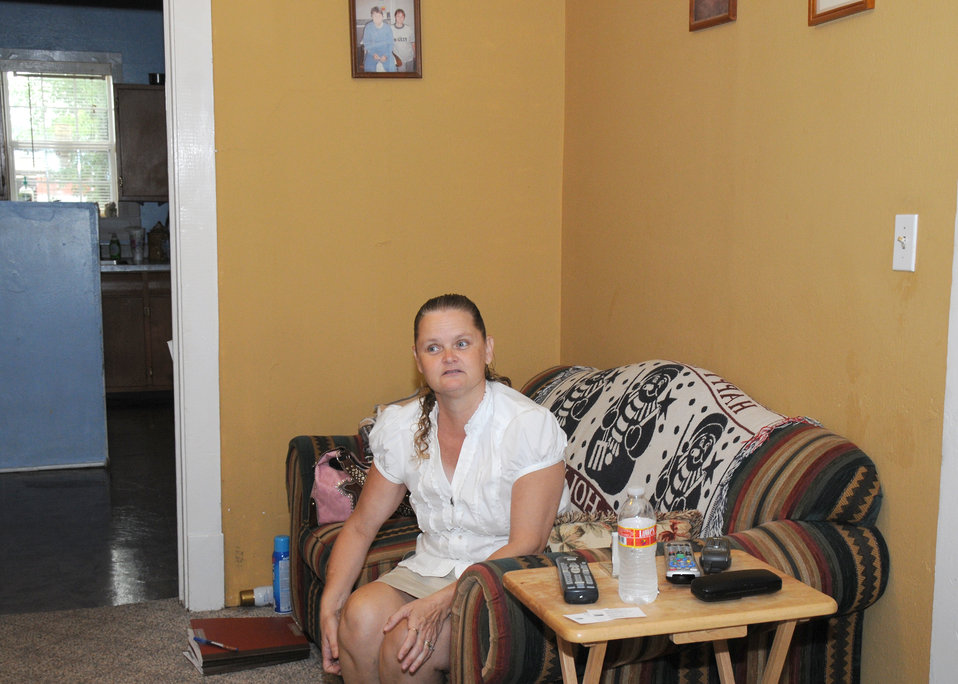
Ms. Shirley Ford sits in the livingroom of the house she was able to purchase with the aid of Rural Development in Hollis, Oklahoma. Through the use of American Recovery and Reinvestment (ARRA) funds RD was able to loan Ms. Ford $11,730.00 towards the purchase of her first home. Ms. Ford received additional funding for a down payment from two non-profit agencies. Ms. Ford had a heart attack a year ago and used the money she had saved for the down payment on her home to pay her medical bills. She has no health insurance.